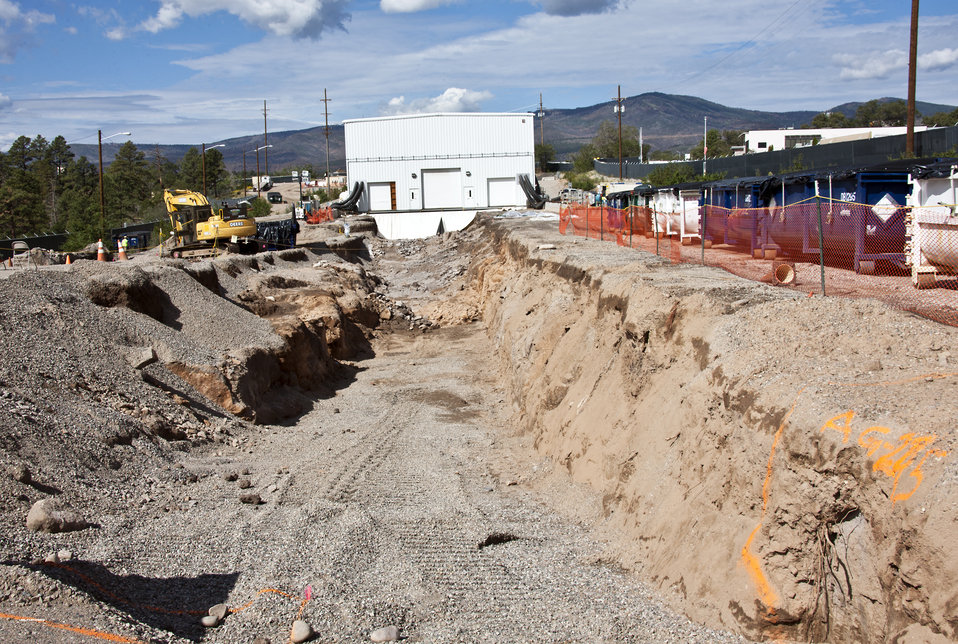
Los Alamos Lab Completes Excavation of Waste Disposal Site Used in the 1940s

The excavated trench behind Enclosure 1, a moveable
enclosure, will be filled with clean soil.

Los Alamos National Laboratory completed excavation of its oldest waste disposal site, Material Disposal Area B (MDA-B), in September 2011 thanks to American Recovery and Reinvestment Act funding.